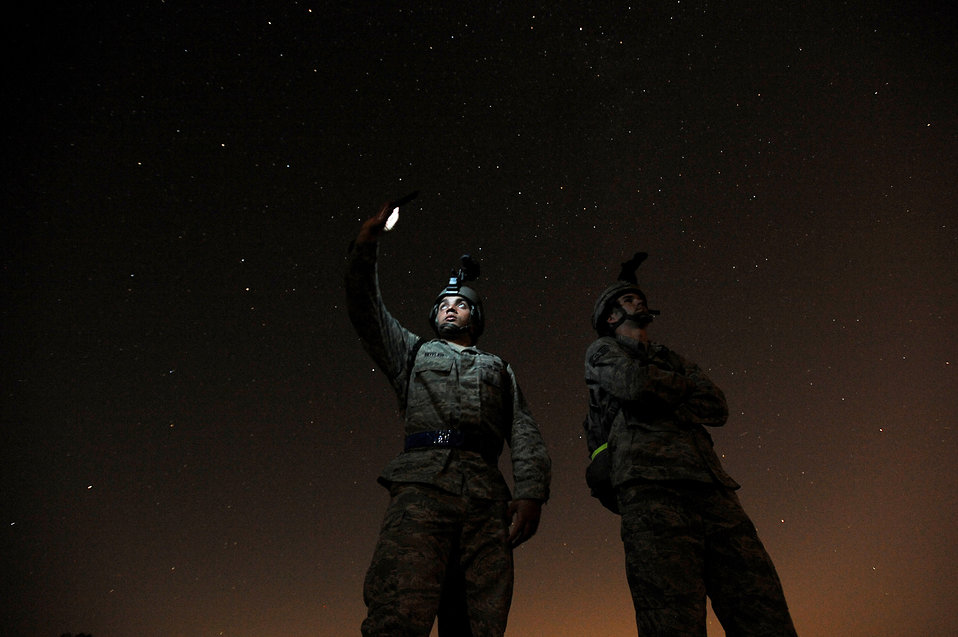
Joint Forces Entry Exercise

First Lt. Christopher Hoyler and Staff Sgt. Phillip Lowery watch as Soldiers parachute down on to a drop zone as part of the Joint Forces Entry Exercise at Fort Bragg, N.C., Sept. 13, 2010. Lieutenant Hoyler and Sergeant Lowery are assigned to the 1st Combat Camera Squadron at Charleston Air Force Base, S.C., and the Soldiers are assigned to the 82nd Airborne Division at Fort Bragg.